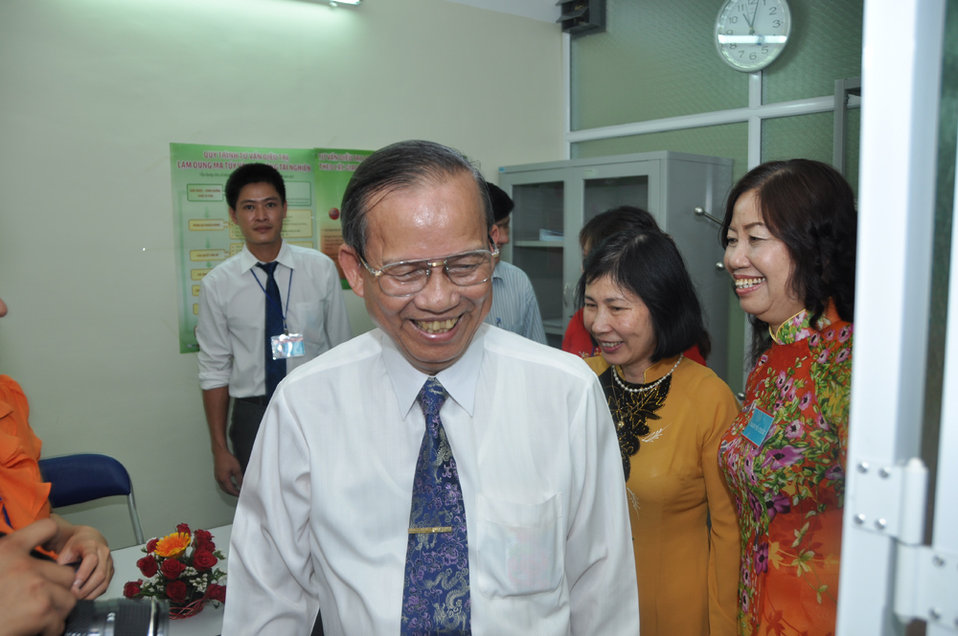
Co-pay Methadone Treatment Center Opens in Hai Phong on June 18, 2011

Deputy Prime Minister Truong Vinh Trong.